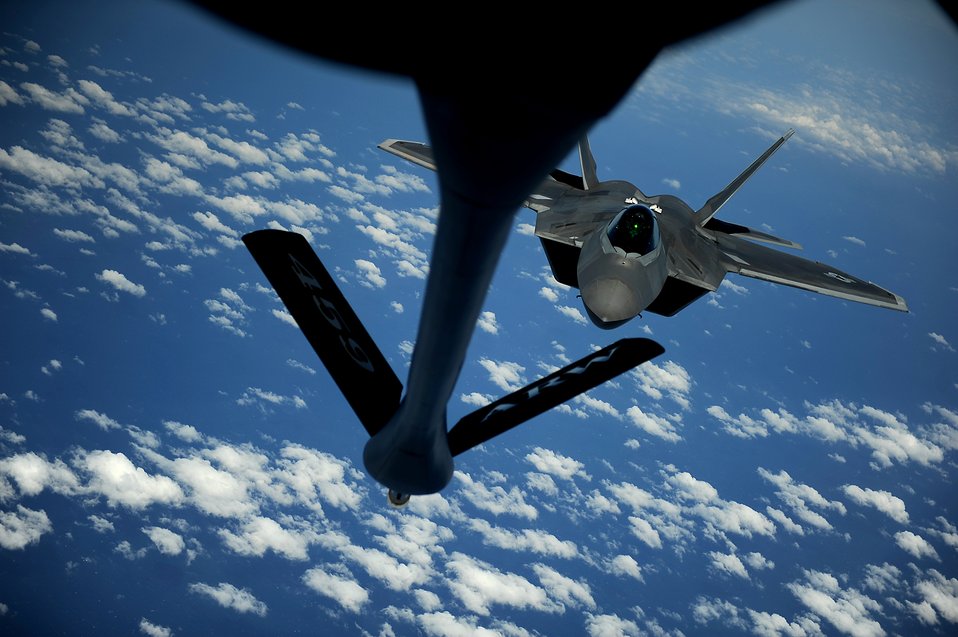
F-22 Raptor

A 1st Fighter Wing's F-22 Raptor from Joint Base Langley-Eustis, Va. pulls into position to accept fuel from a KC-135 Stratotanker with the 756th Air Refueling Squadron, Joint Base Andrews Naval Air Facility, Md. off the east coast on May 10, 2012. The first Raptor assigned to the Wing arrived Jan. 7, 2005. This aircraft was allocated as a trainer, and was docked in a hanger for maintenance personnel to familiarize themselves with its complex systems. The second Raptor, designated for flying operations, arrived Jan. 18, 2005. On Dec. 15, 2005, Air Combat Command commander, along with the 1 FW commander, announced the 27th Fighter Squadron as fully operational capable to fly, fight and win with the F-22. (U.S. Air Force Photo by: Master Sgt. Jeremy Lock)